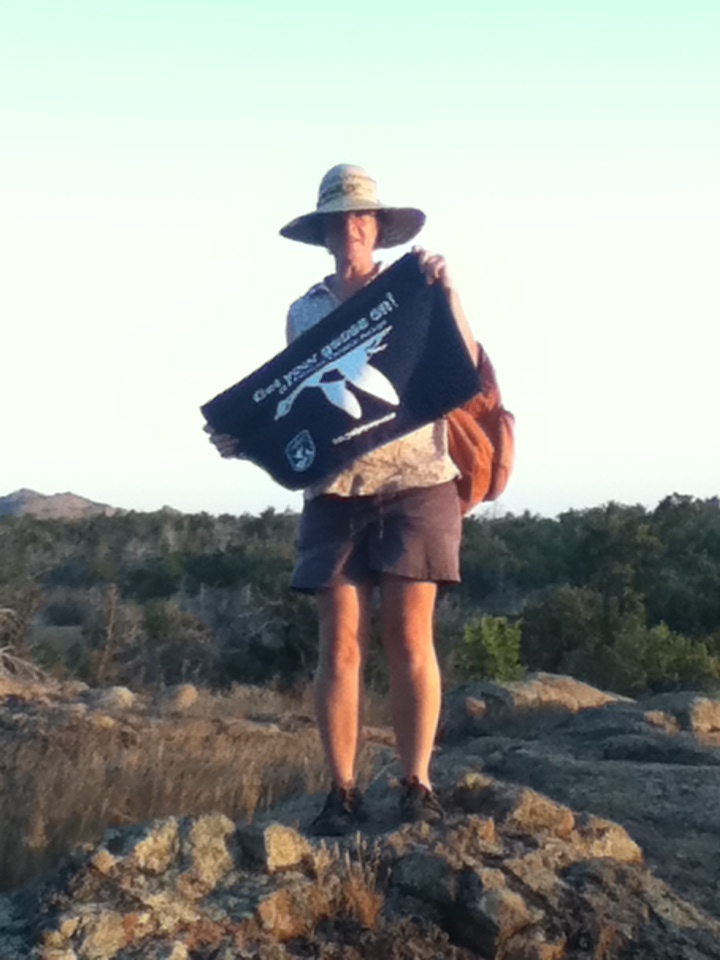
Get Your Goose On!

Wichita Mountains National Wildlife Refuge in Oklahoma.